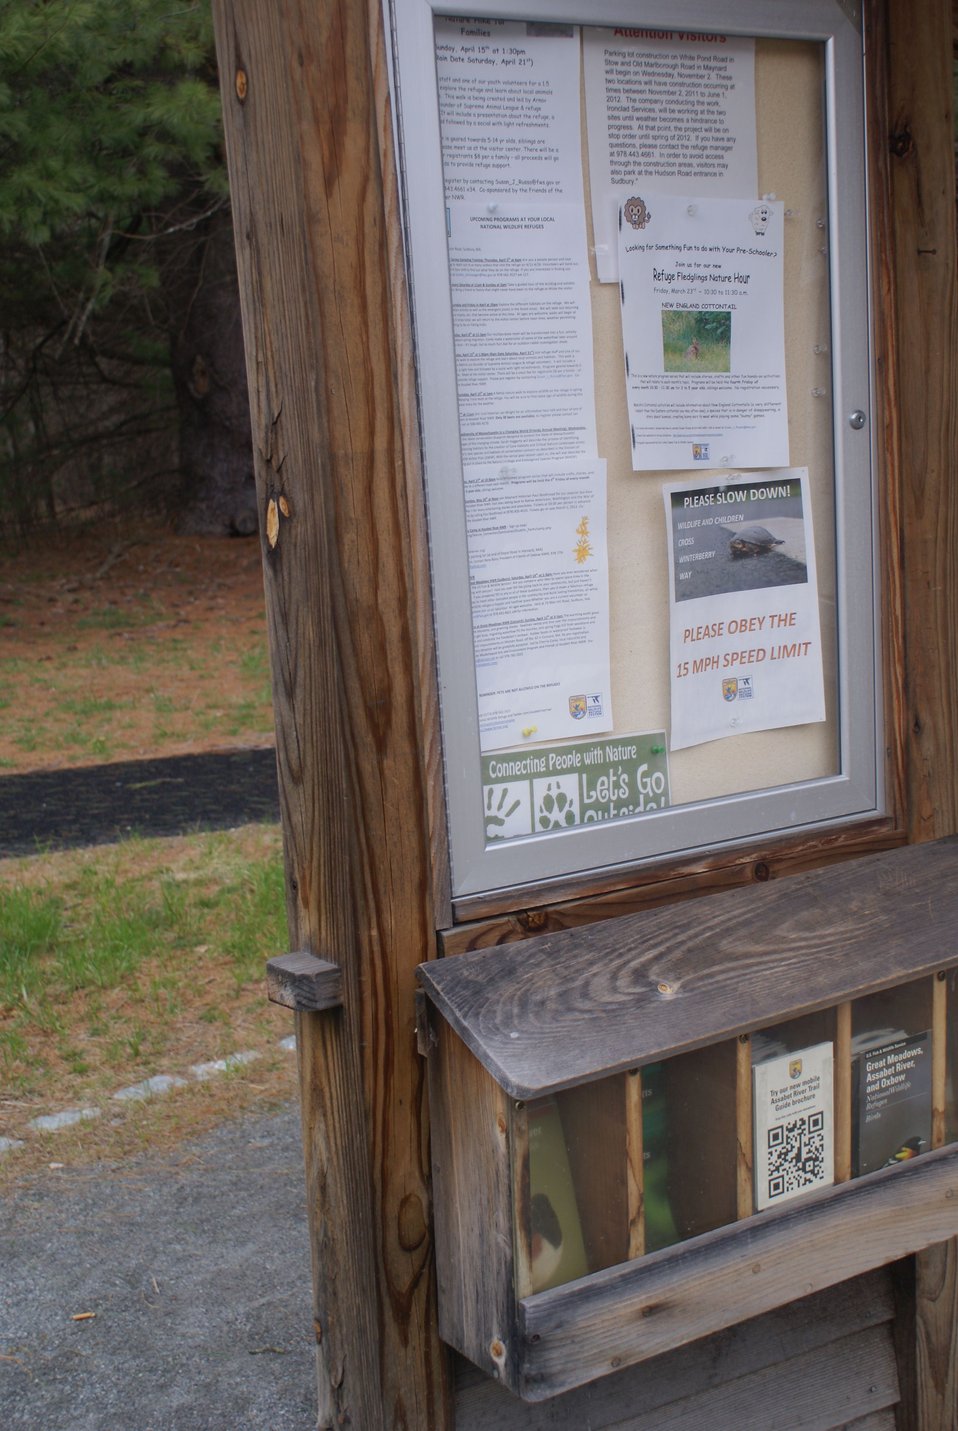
QR codes at Assabet Rr Refuge

QR codes in refuge kiosk at Assabet River Refuge in Massachusetts